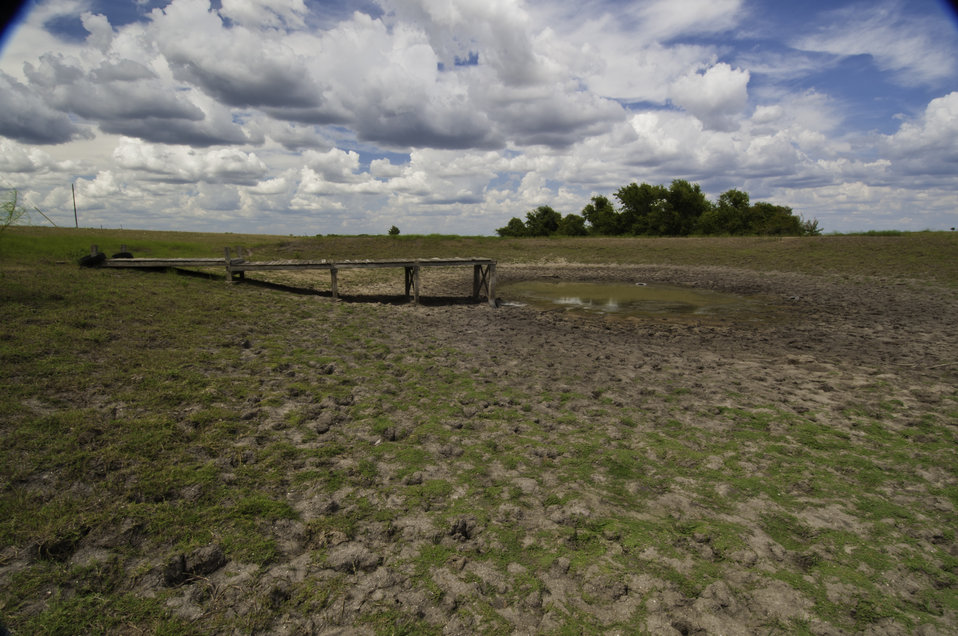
Dry livestock tanks show the effect of drought in Schulenberg, TX on Aug. 23, 2013.